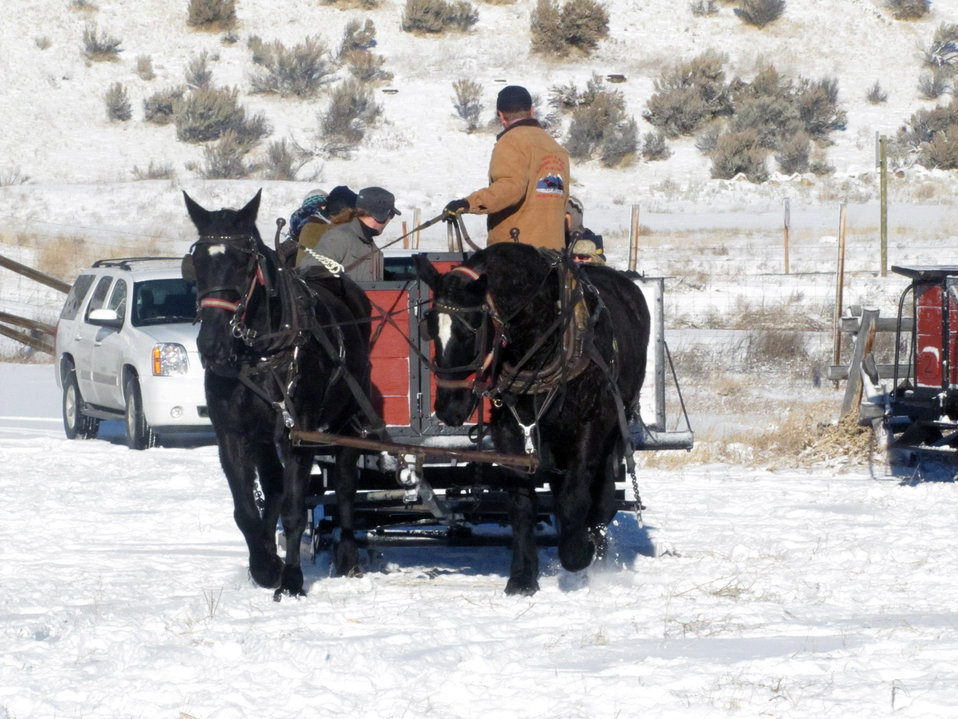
On Their Way

A team of horses pulls away from the boarding area as a sleigh heads out for a wildlife tour with guests on board.